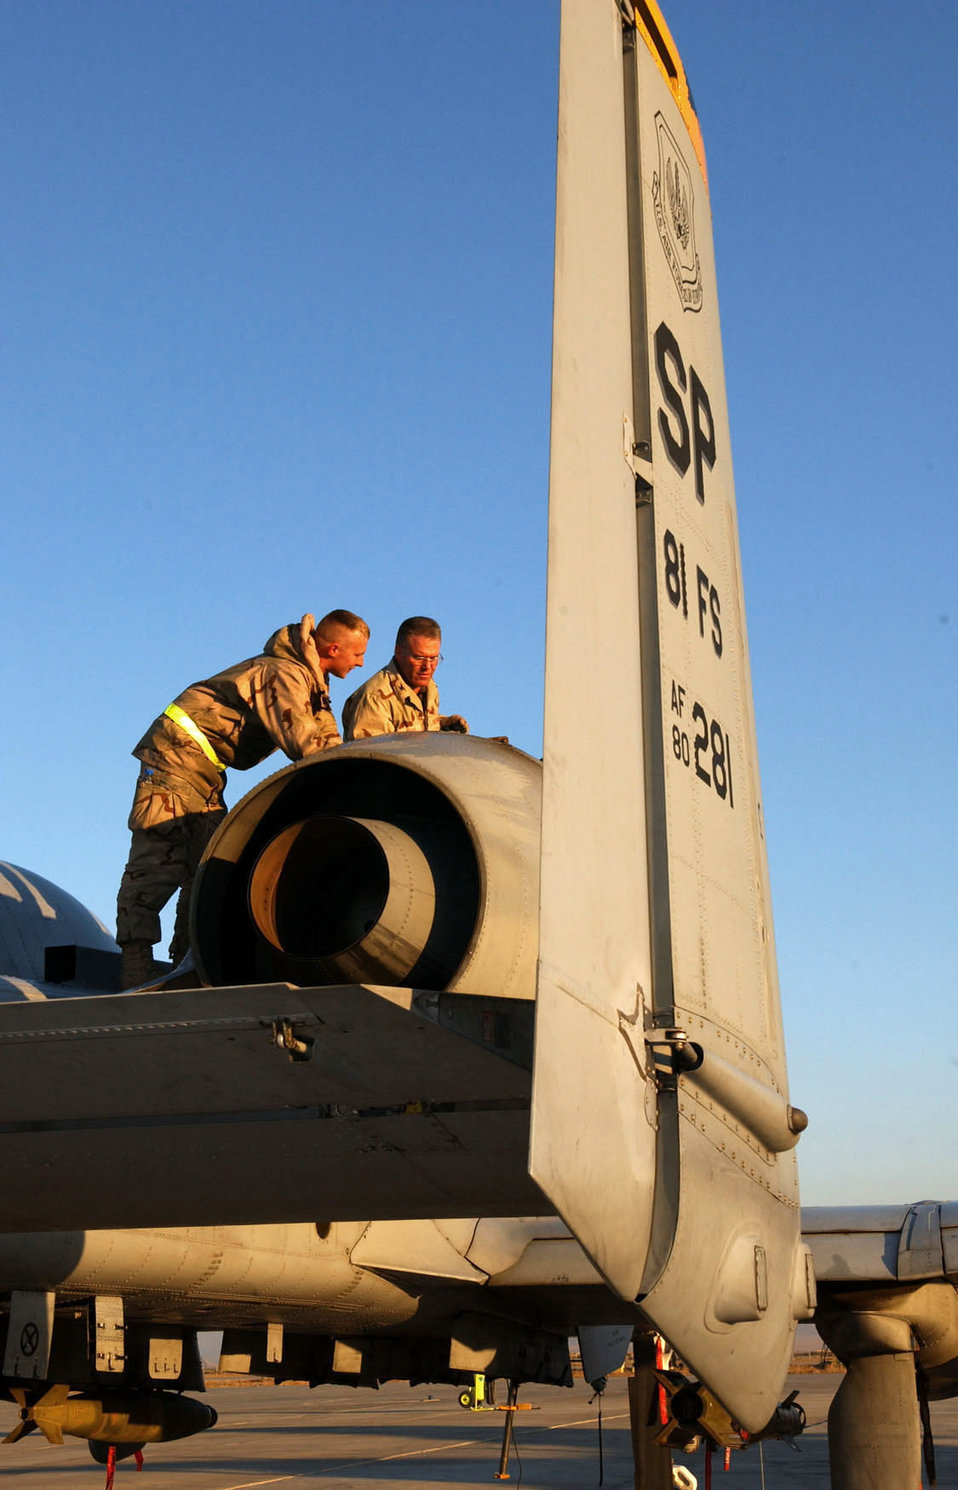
Crew chief for a day

BAGRAM AIR BASE, Afghanistan -- Staff Sgt. Franklin Newbery (left) teaches Col. Derrick Hoxie III how to take oil and fluid samples from an A-10 Thunderbolt II here Dec. 25. The colonel was participating in the 455th Expeditionary Maintenance Squadron's Crew Chief for a Day program. The program offers deployed Airmen of all Air Force specialties a chance to experience what it is like to work on fighter jets. "What better way is there to spend Christmas Day while on deployment than with the maintainers out on the flightline?" said Colonel Hoxie, the 455th Air Expeditionary Wing deputy commander. "I learned that we have a very professional team of maintainers out there, and the experience only reaffirmed what I have thought all along." Sergeant Newbery is a crew chief deployed from Spangdahlem Air Base, Germany, supporting Operation Enduring Freedom. Colonel Hoxie is deployed from the 552nd Air Control Wing at Tinker Air Force Base, Okla.